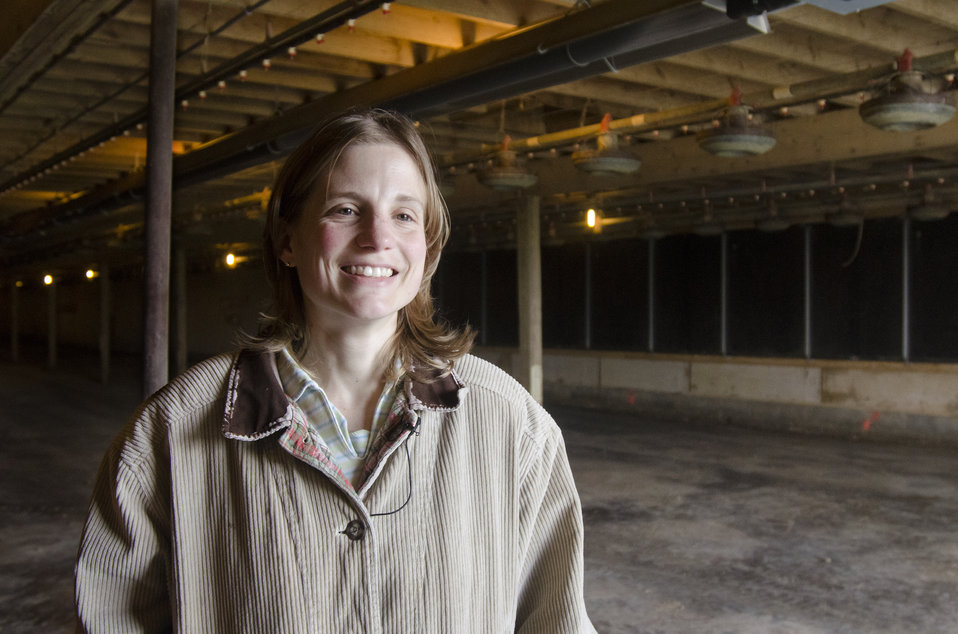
Roxanne Molnar and her husband Mathew have an 80,000 chicken farm in Grantville, PA, and were recipients of a $20,000 Rural Energy for America Program (REAP) grant. Her oversized coat and wind blown hair are standard for this American poultry farmer, wife and mother of two boys, on Thursday, April 21, 2011. The grant money is a portion of the cost it took the Molnar’s to modernize the second of two 40,000 chicken capacity chicken houses. Chickens need to be kept at a comfortable temperature to remain productive. New radiant heaters keep the chickens warm during Pennsylvania winters. On warm days, ceiling vents provide passive venting of heat out of the building; when chicken house temperatures are estimated to be above 90 degrees, fans come on, pulling air through water evaporator elements lowering air temperature down 10-15 degrees and flows along the chicken house's length, in effect a tunnel of cooled air. The benefits to the chickens are heat and excess moisture removal; minimized dust and odor; limits buildup of ammonia and carbon dioxide; and provides oxygen for respiration. All these systems are computer controlled allowing owner, Roxanne Molnar to run the farm by herself and raise two small boys Gavin (2) and Grant (5). Husband, Matthew works off the farm and frequently travels, so along with the demands of parenting and manually controlling fans, vents, and having to remove the 80,000 chickens from their feeders and moving them around to cool them was an increasingly daunting task. The computer controls of the new system automate many of the daylong tasks allowing the Molnar’s to run their family farm. USDA Photography by Lance Cheung.